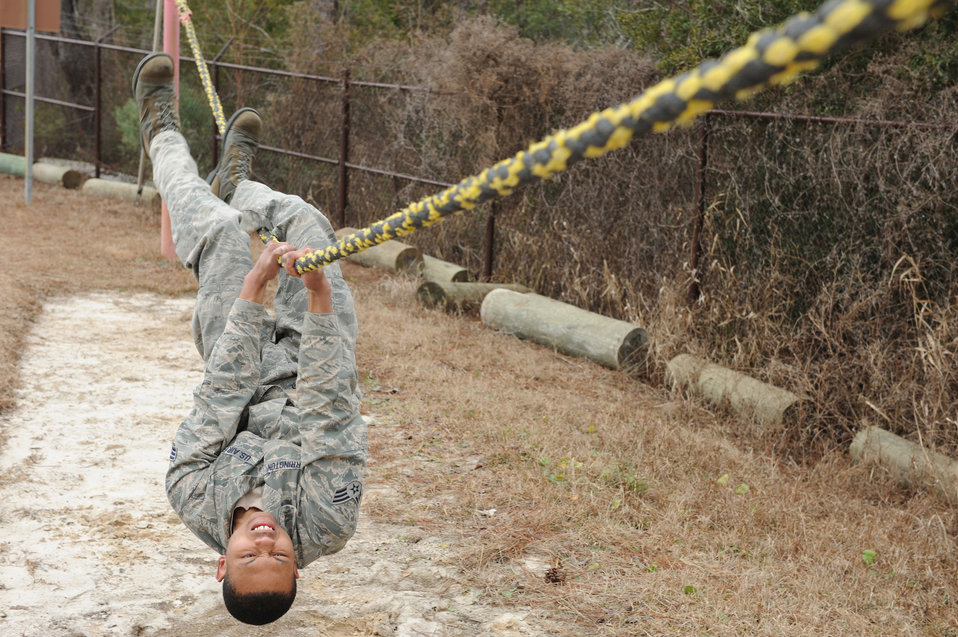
I can do this

Senior Airman Travian Fearrington participates in a combat controller and special operations weather team assessment Feb. 9, 2011, at Hurlburt Field, Fla. Airman Fearrington is assigned to the 5th Force Support Squadron. He is a cross-training candidate for the combat controller career field.